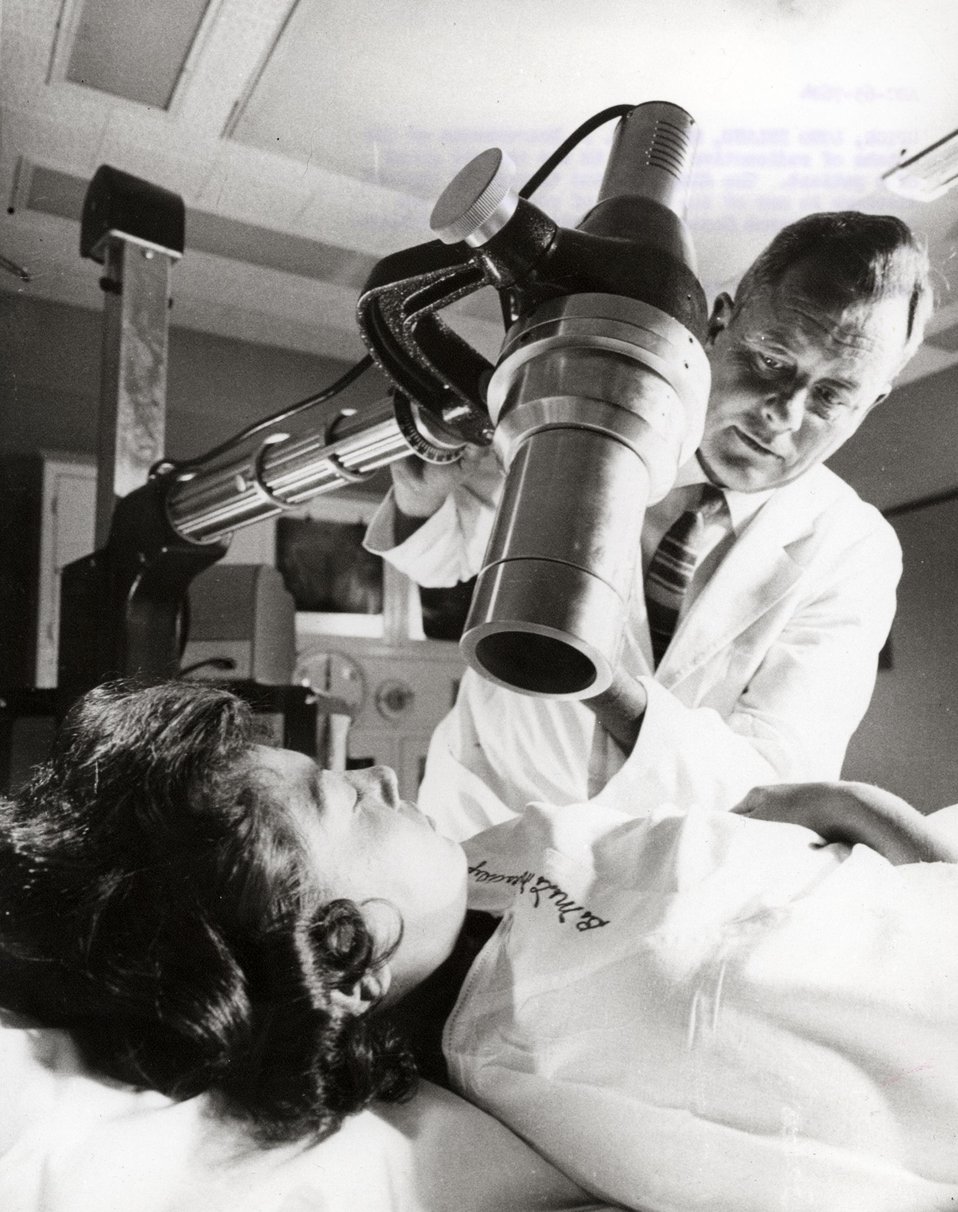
Measurement of the uptake of radioactive iodine in the thyroid gland of a patient.
c.1965